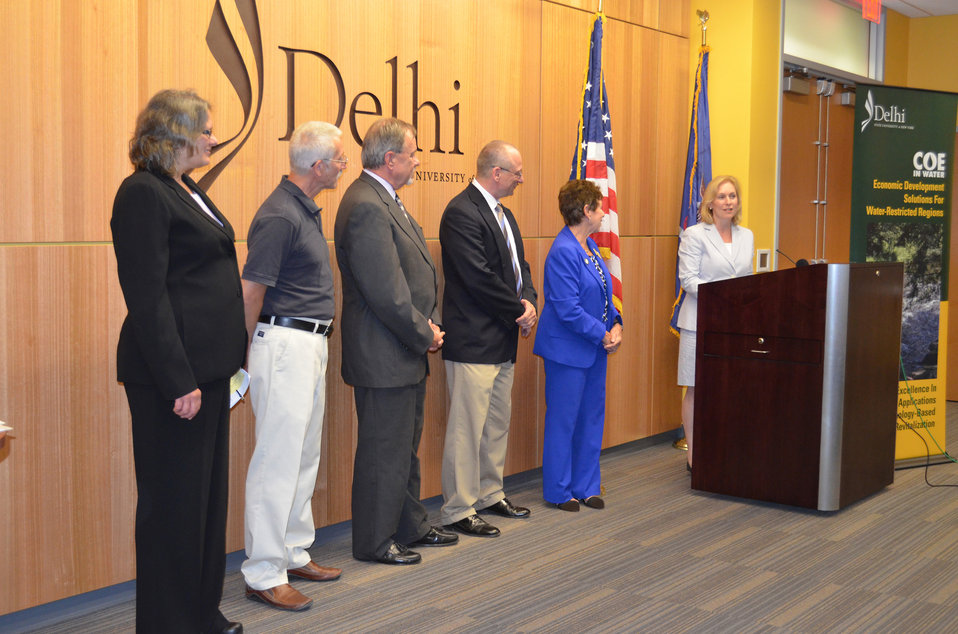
Delhi Blog

Water Quality Agreement: From left, Liz Van Buren, Saputo Dairy Foods; Richard Maxey, Delhi mayor; James Thompson, Delaware County; SUNY Delhi President Candace Vancko and U.S. Senator Kirsten Gillibrand.